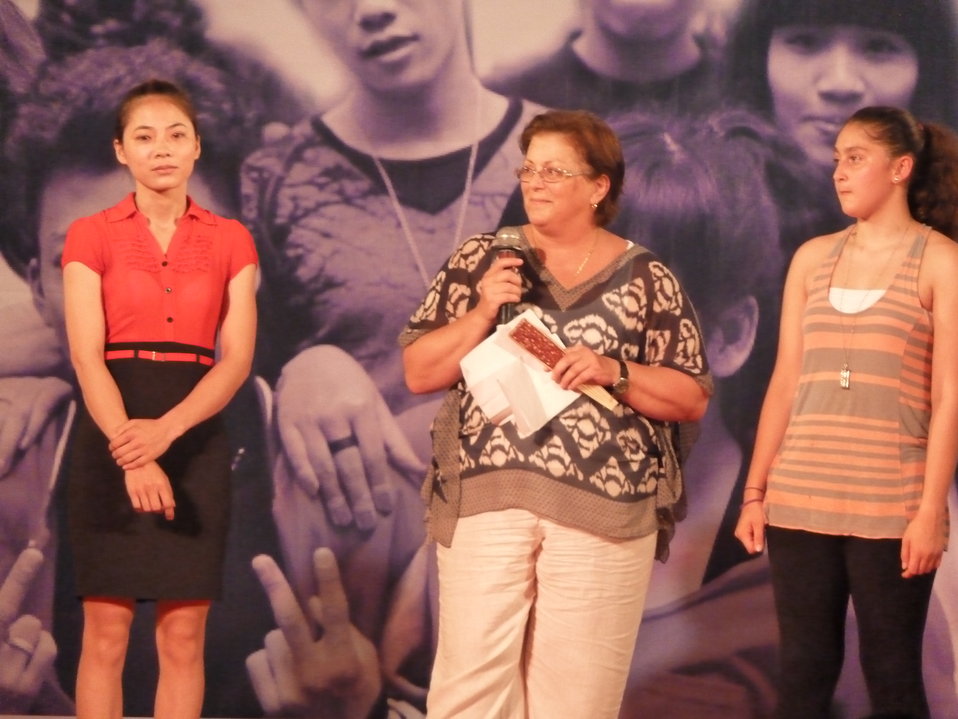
U.S. Embassy Deputy Chief of Mission Claire Pierangelo raps on state to the hip hop against HIV/AIDS beat.

PEPFAR Sponsors Hip Hop to Stop the Spread of HIV